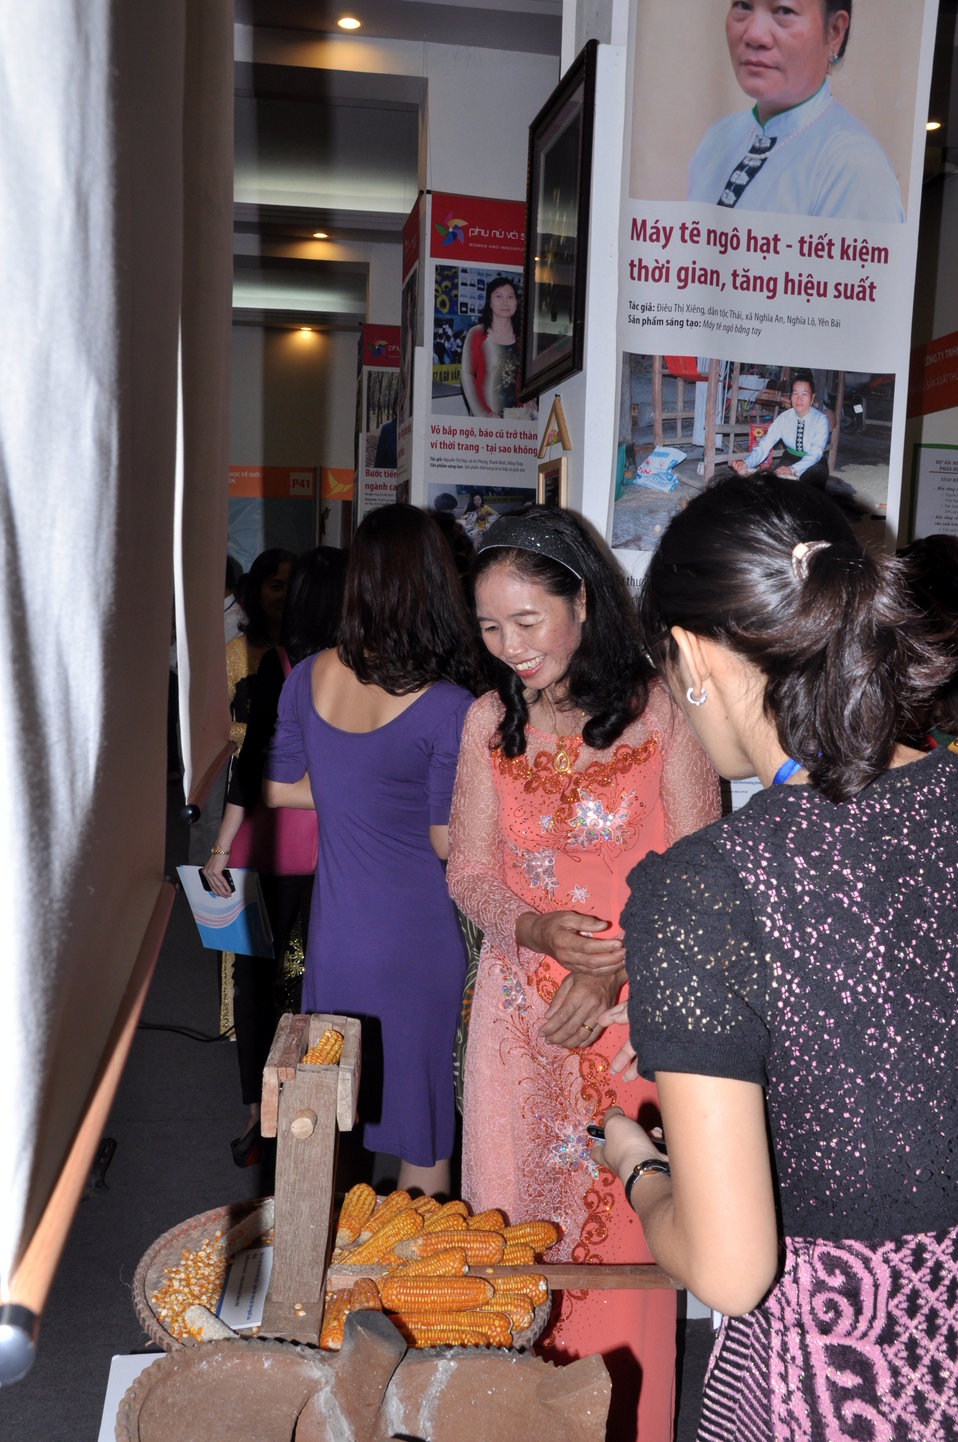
Vietnam Women Innovation Day 2013

Hanoi, October 1, 2013.